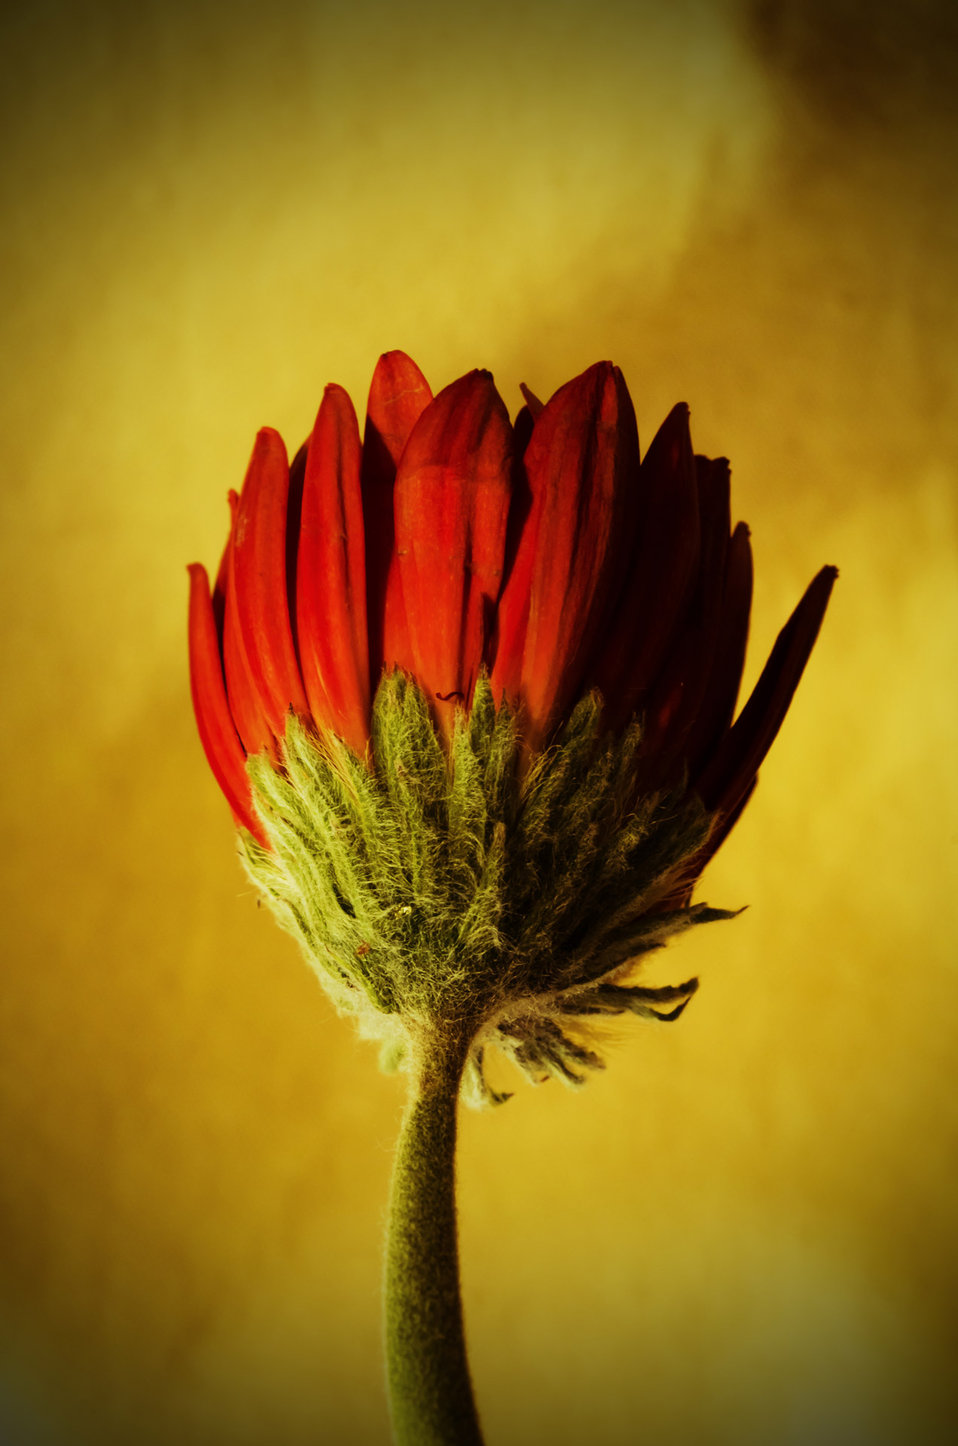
Flower - macro.